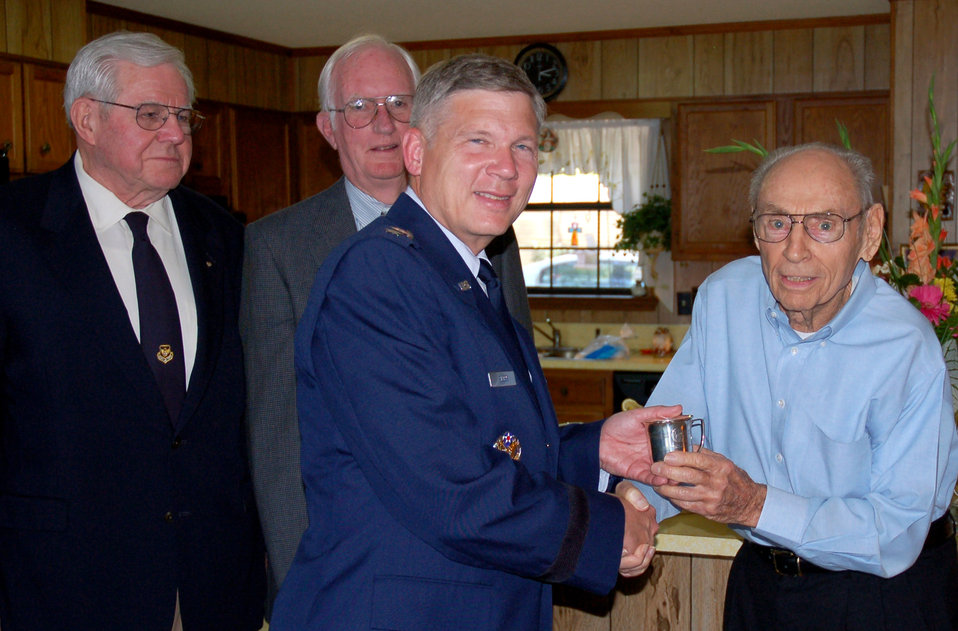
Lt. Gen. Robert J. Elder Jr., Eighth Air Force commander, accepts the donation of one of the nine Eaker Bowl cups from Charles Jones Jr. Mr. Jones' father, Lt. Col. Charles Jones Sr., was one of the nine original members of the Castle Coombe Mess established by General Ira C. Eaker, who first commanded Eighth Air Force in England during World War II. Two former Eighth Air Force commanders, retired Lt. Gen. Edgar S. Harris Jr. (left) and retired Lt. Gen. E.G.